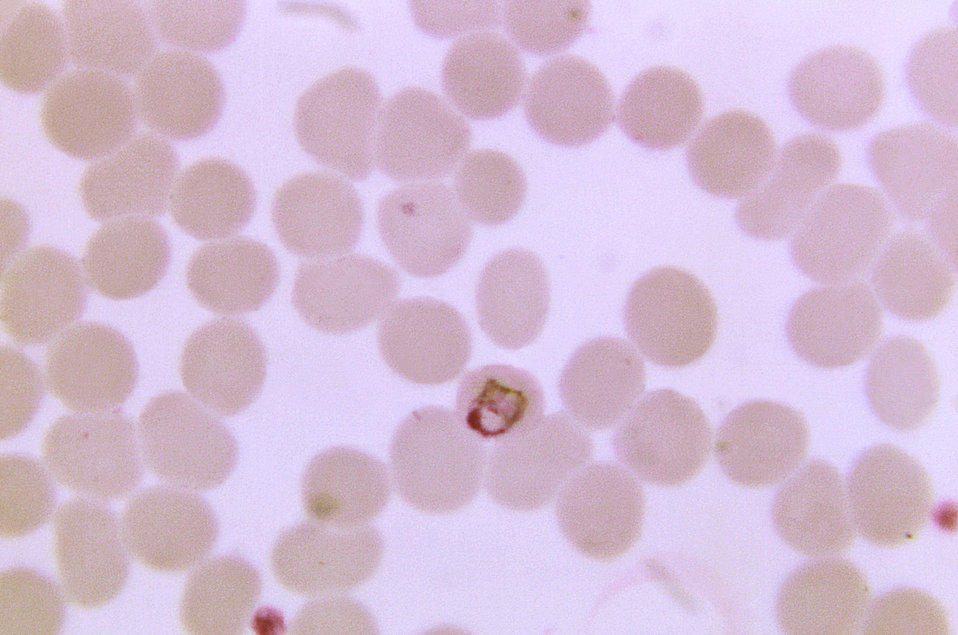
This thin film blood smear micrograph depicts a growing Plasmodium malariae basket-form trophozoite.